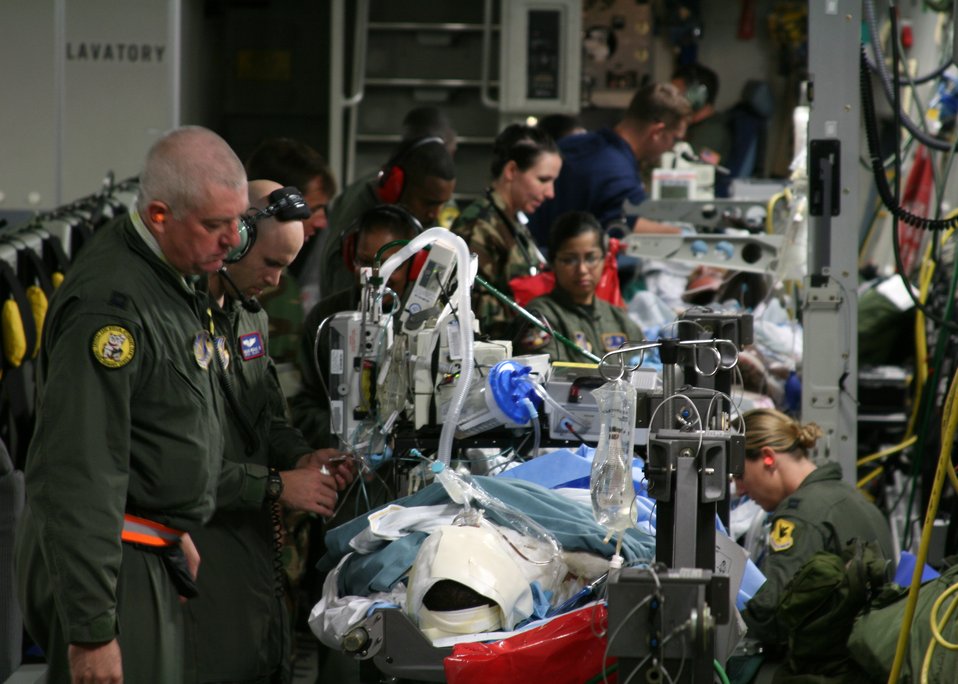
Medical Evacuation

Medical personnel attend to an injured sailor aboard a Hawaii based C-17 Globemaster III at Hickam Air Force Base, Hawaii. Six sailors recieved severe burns when a steam line ruptured in the engineering room of the USS Frank Cable in Guam.